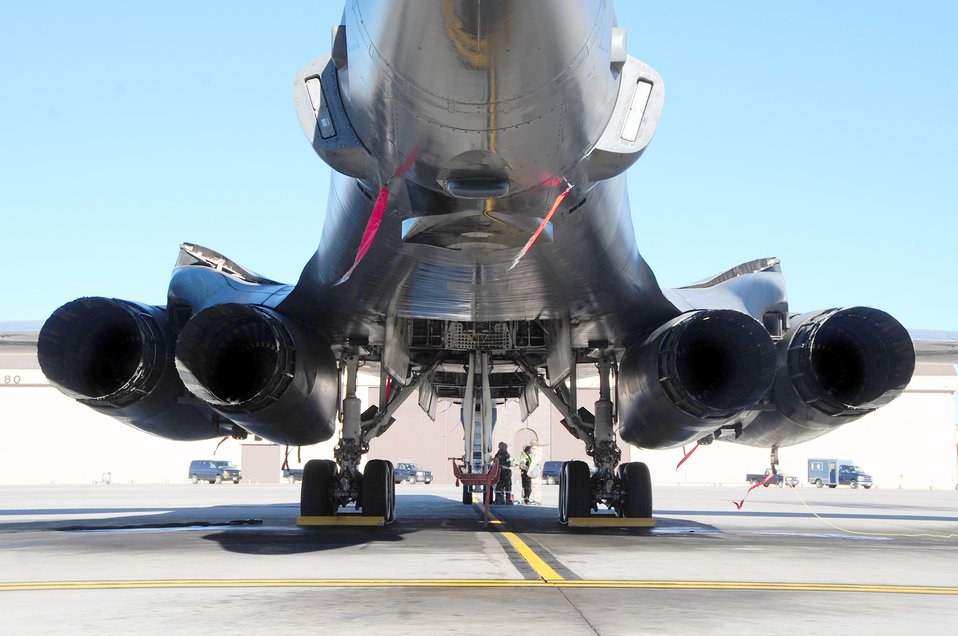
Phase II Operational Readiness Inspection

Airmen check over a technical order while working on a B-1B Lancer during a Phase II Operational Readiness Inspection Oct. 15, 2010, at Ellsworth Air Force Base, S.D. Maintenance Airmen use the TO to ensure safety and accuracy. Airmen are assigned to the 28th Aircraft Maintenance Squadron.